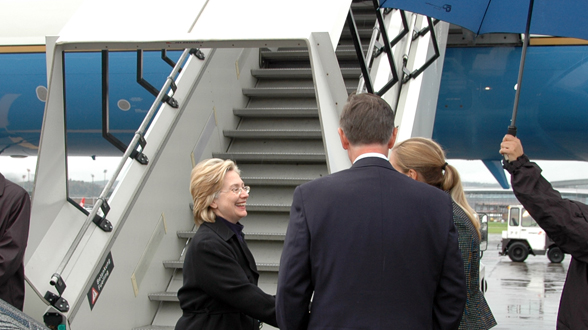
Secretary Clinton Arrives in Zurich

U.S. Secretary of State Hillary Rodham Clinton is greeted by U.S. Ambassador to Switzerland Donald S. Beyer and Ms. Alexandra Baumann (Federal Department of Foreign Affairs) during her arrival in Zurich, Switzerland October 9, 2009.